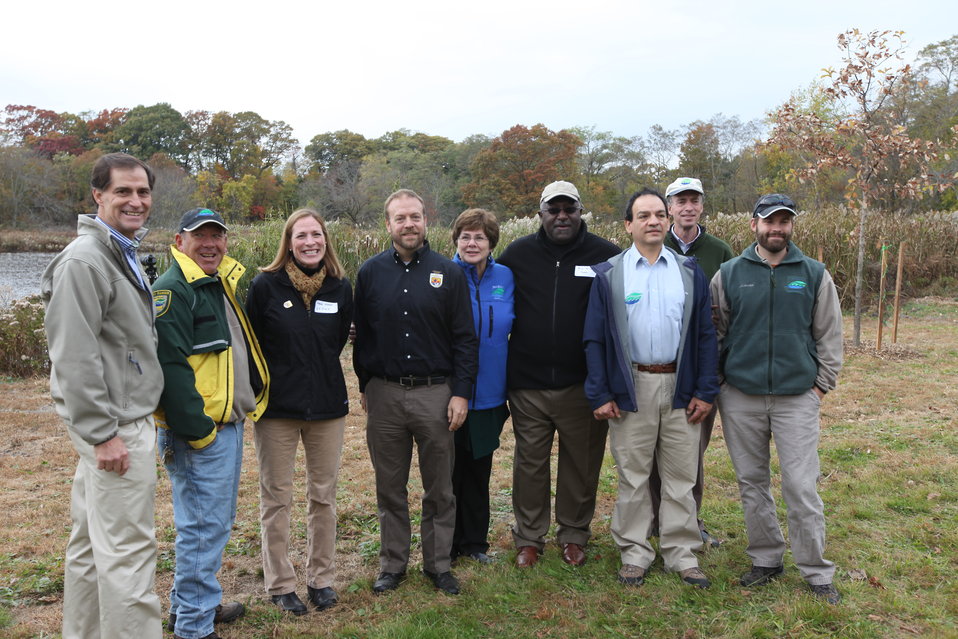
New Haven Parks, Recreation and Trees

U.S. Fish and Wildlife Service Director Dan Ashe, Northeast Regional Director Wendi Weber, and Chief of Northeast national wildlife refuges Scott Kahan with partners from New Haven Parks, Recreation and Trees.